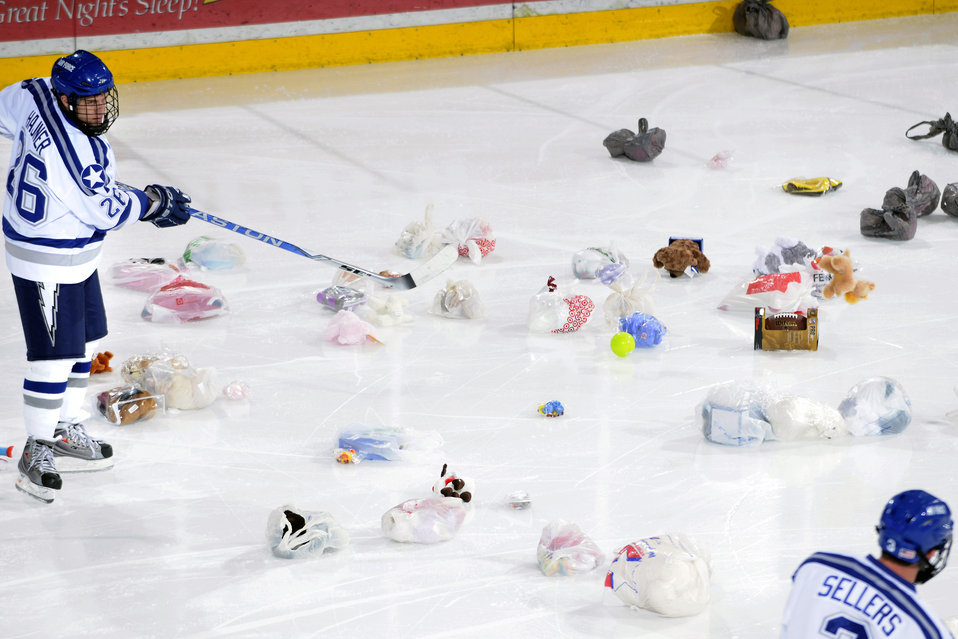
Falcons 'Toy Trick' reins in toys

Falcons forward Jeff Hajner and defender Brad Sellers rein in toys from the